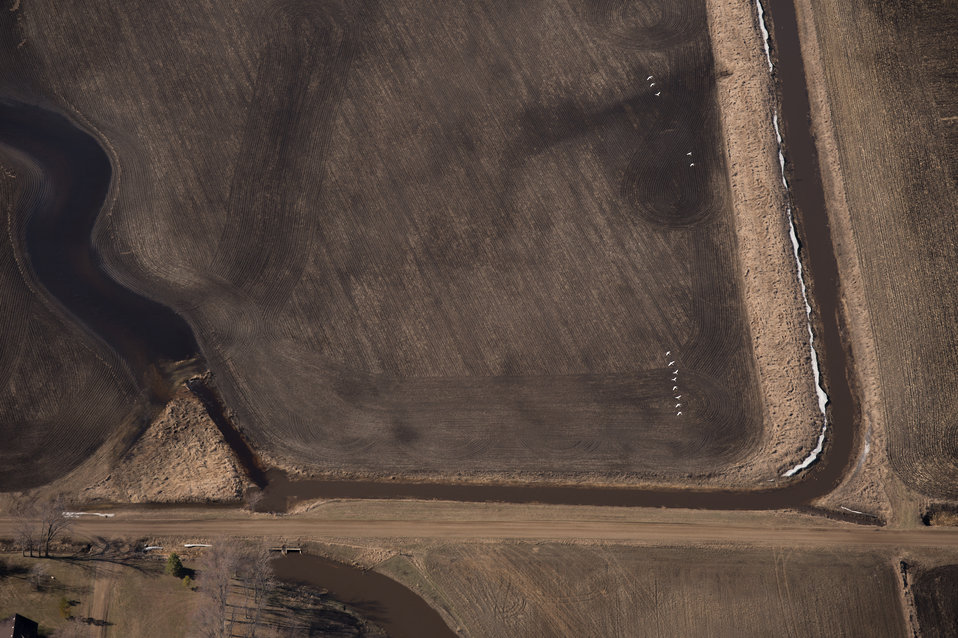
White migratory birds fly in formation over the Ehlert U.S. Department of Agriculture (USDA) Natural Resources Conservation Service (NRCS) Wetland Reserve Program (WRP) in Wilkin County, MN, on Tuesday, April 30, 2013. For information about this and other programs from the USDA Red River Basin Initiative (RRBI) please see www.mn.nrcs.usda.gov/news/features13/RRBI.html.